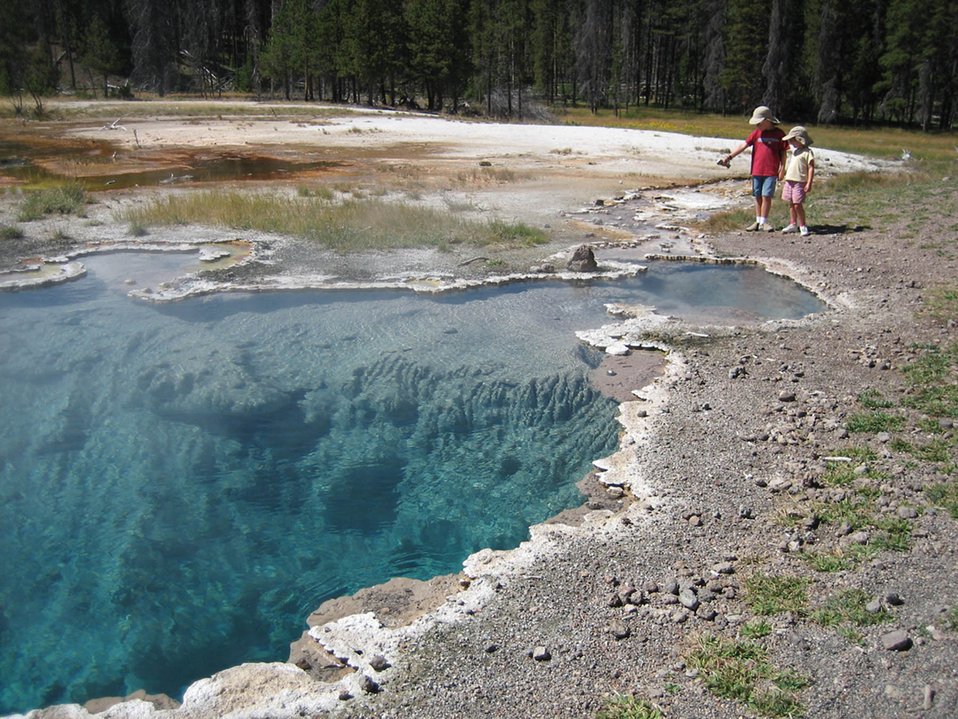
Uploaded by request of Bob Fuhrmann

Taken in yellowstone National Paark

This was taken on an August weekend last year on a trail near Firehole Lake
Drive. The children (mine) are taking the temperature of the runoff channel of this hot spring with an infrared
thermometer from the trail.